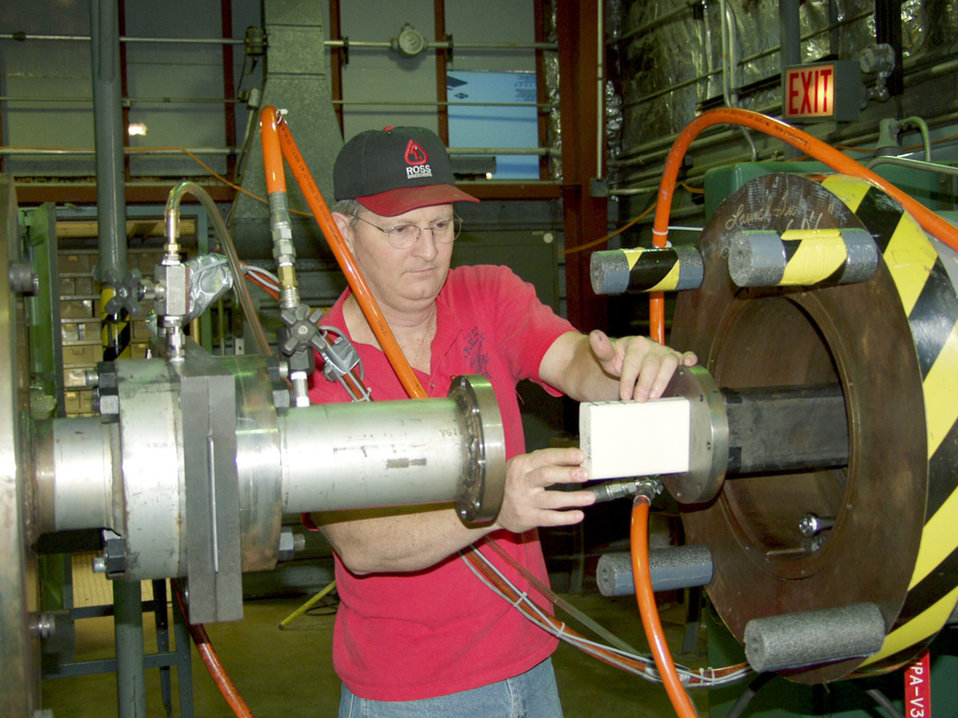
Center's 'chicken gun' helps shuttle return to flight

ARNOLD AIR FORCE BASE, Tenn. -- Larry Phipps loads a foam projectile into the 86-foot-long rectangular barrel used to conduct testis for the space shuttle return-to-flight program.